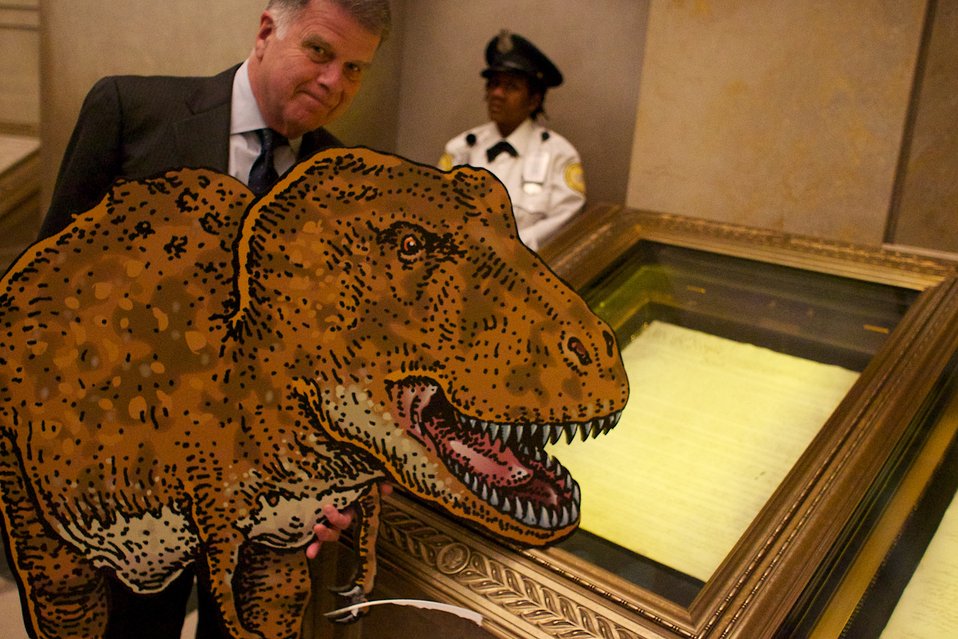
Smithsonian Institution's TRex visits the National Archives